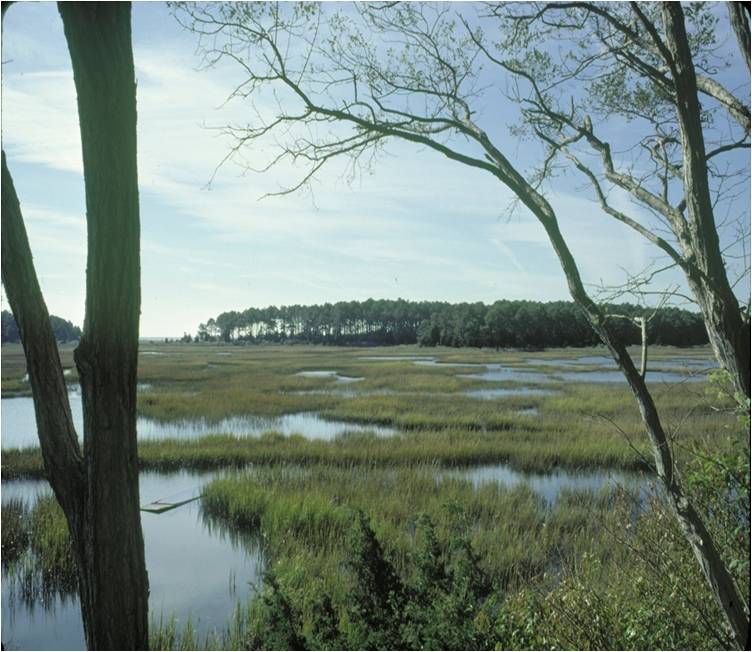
Eastern Shore of Virginia National Wildlife Refuge

View of saltmarsh from the nature trail overlook.